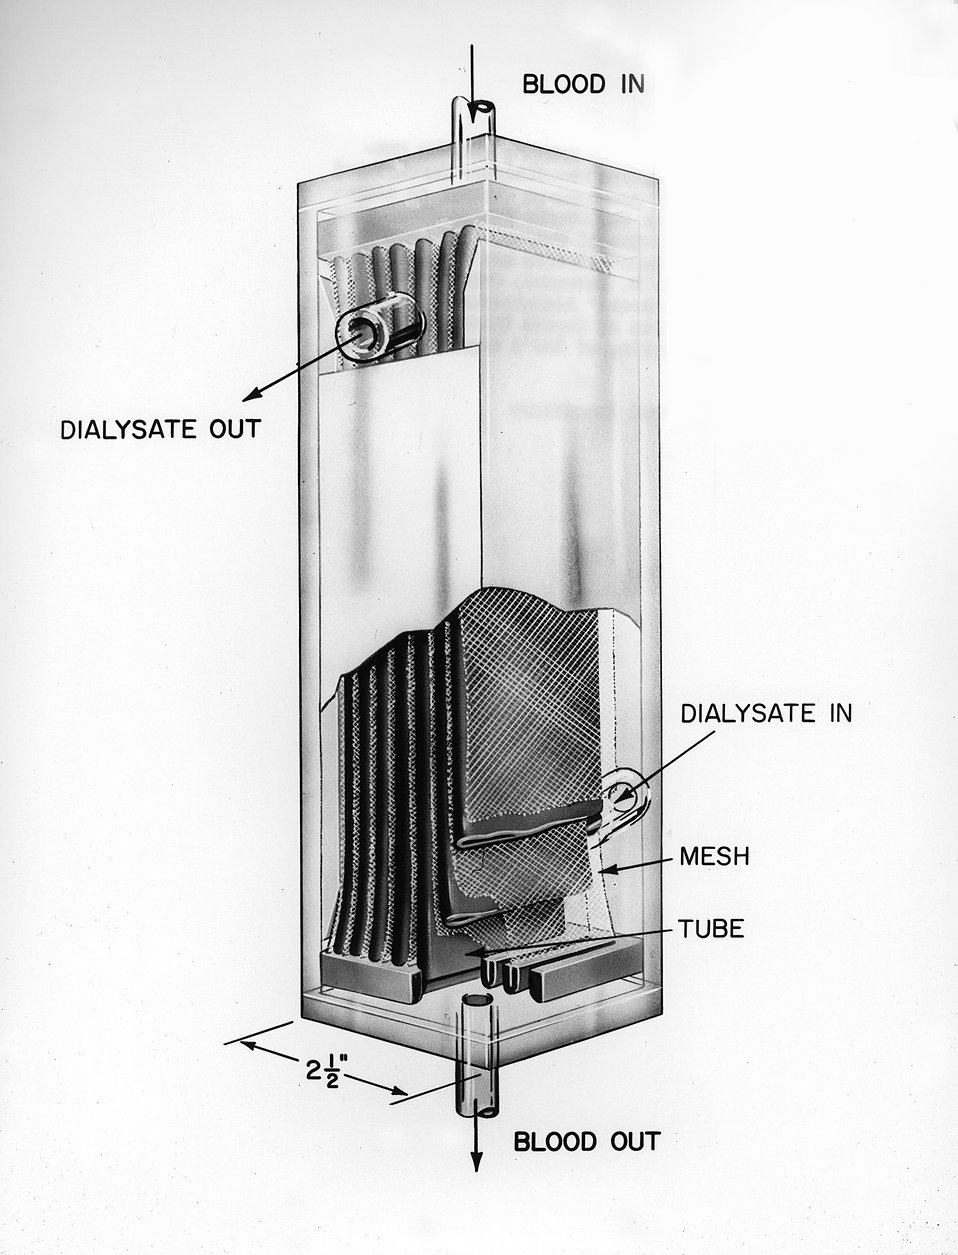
Cutaway drawing showing construction of early prototype hemodialyzer (artificial kidney) which is under development through an interagency agreement between AEC and National Institutes of Health.
c.1969